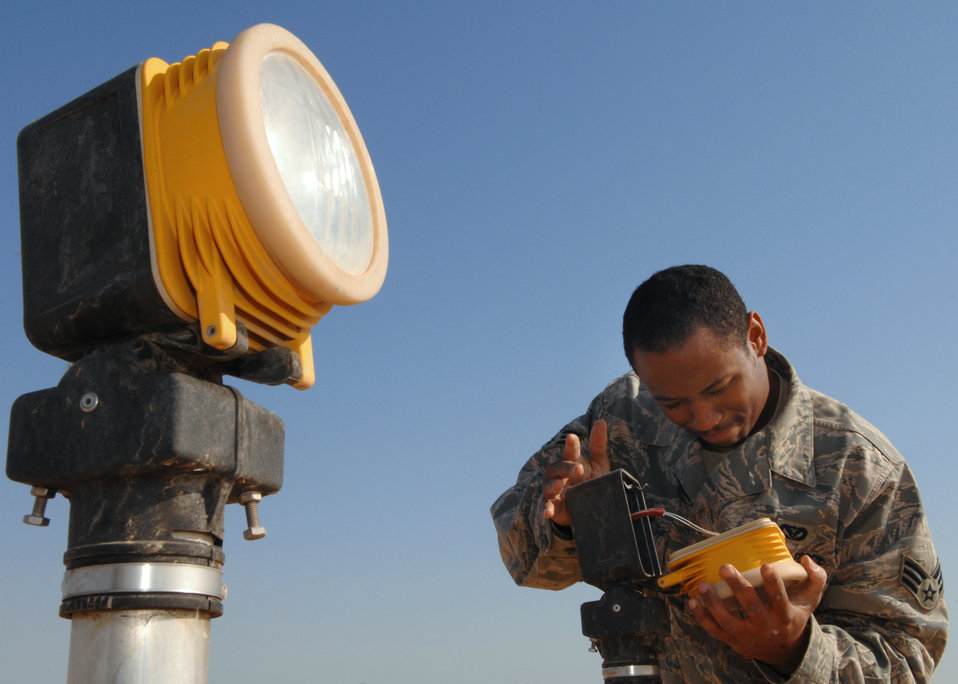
Lighting the way

Senior Airman Travis Morehead troubleshoots an approach light Feb. 28 at Balad Air Base, Iraq. These lights aid landing by illuminating the runway. Airman Morehead, a 332nd Expeditionary Civil Engineer Squadron electrician, is deployed from Malmstrom Air Force Base, Mont.